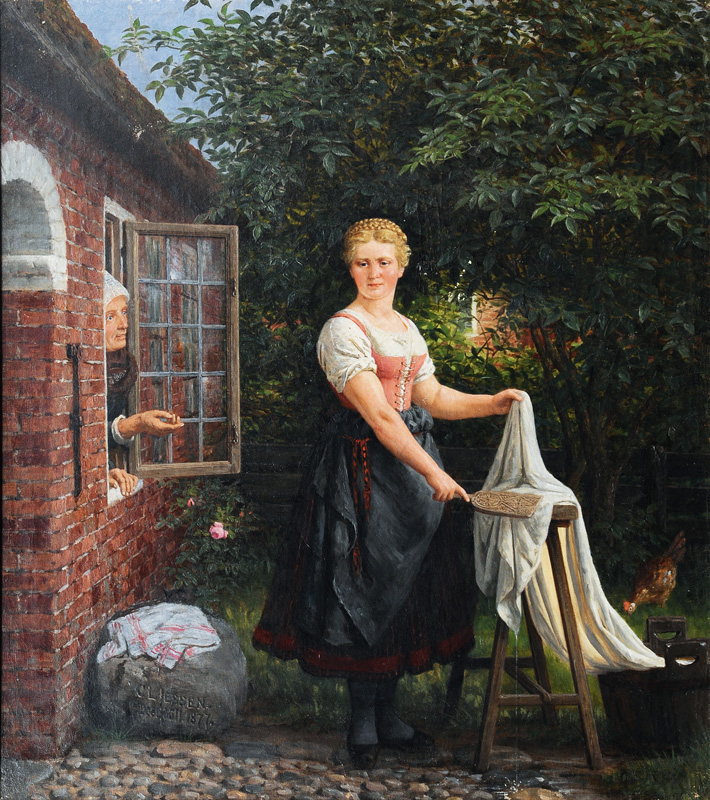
Mädchen bei der Wäsche. Öl auf Leinwand, 64,5 x 58 cm, signiert und datiert C. L. Jessen Deetzbüll 1877